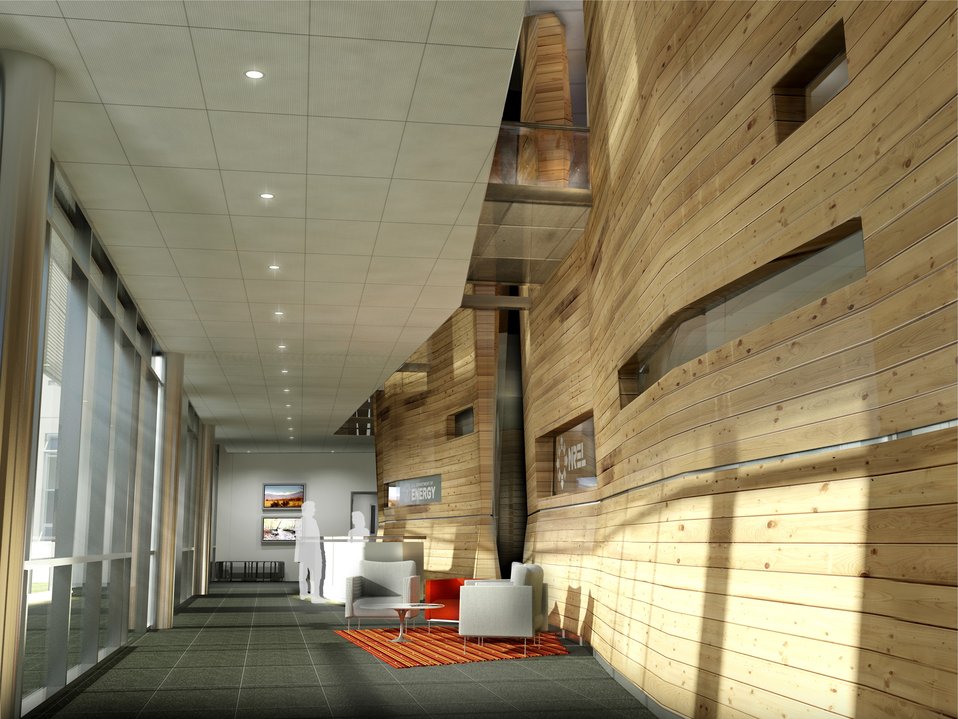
Artist conception of an interior of wall in connection of the building showing paneling made from wood from Beetle damaged trees.

NREL's Research Support Facilities (RSF) will achieve Platinum level certification from the U.S. Green Buildings Council Leadership in Energy and Environmental Design (LEED) takes not only planning but practice.